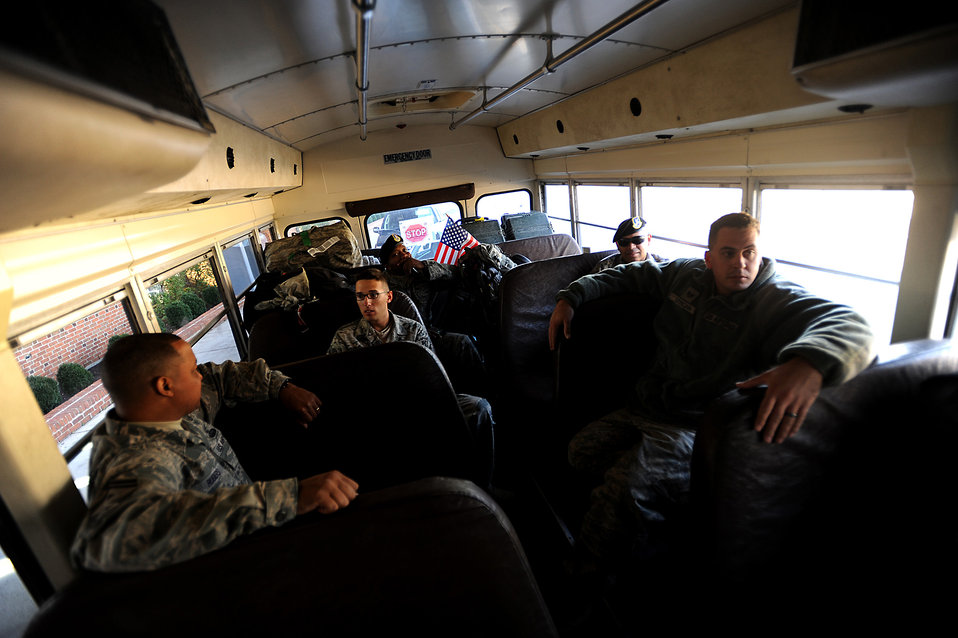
Langley SFS welcomes home deployed defenders

Members from the 633rd Security Forces Squadron, which is at Joint Base Langley-Eustis, Va., ride back to base on a bus after welcoming home and picking up Staff Sgt. John Duncan, Senior Airmen Kristian Robles Cruz and Amber Boyd, and Airman Basic Joseph Wesley from the airport Nov. 2, 2011. The four Airmen were deployed to Joint Base Balad, Iraq. About 10 633rd SFS members are still deployed in Iraq, but they are scheduled to return later this month, although more are expected to deploy to Afghanistan in the next few months.